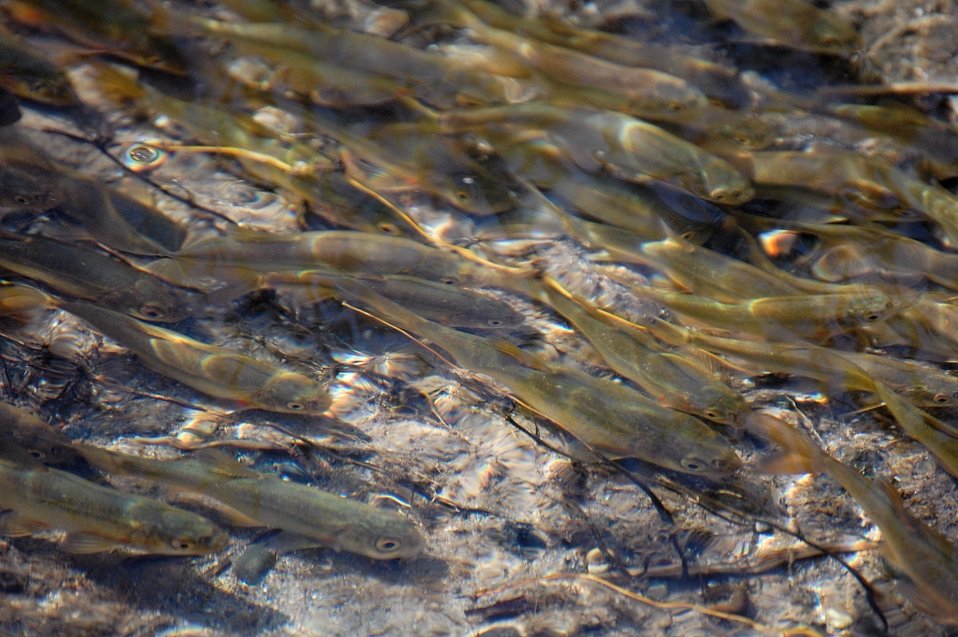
Rio Grande Chub

This project, located in the Partners for Fish and Wildlife San Luis Valley Strategic Focus Area, involved restoring and enhancing over 1.5 miles of Hot Springs Creek in Colorado. The post-restoration conditions have had immediate, positive benefits for the Rio Grande Chub.